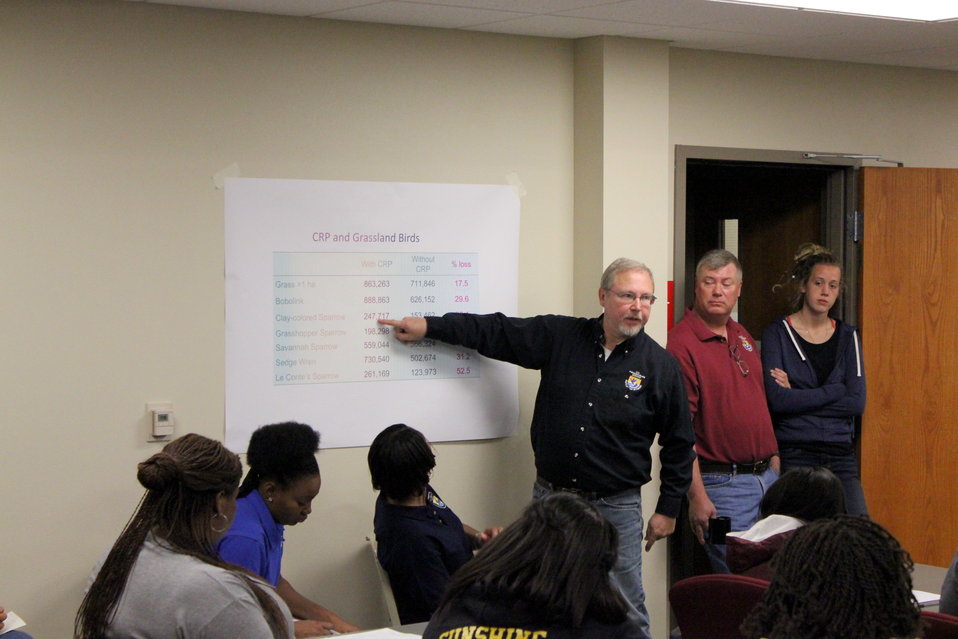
CDIP 2012 Fergus Falls

Learning about grassland management